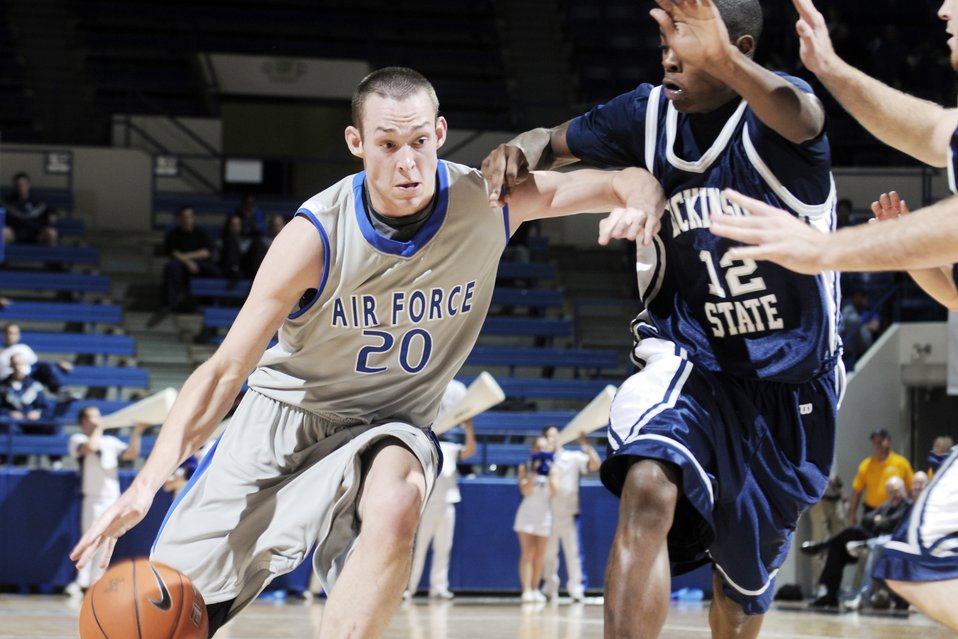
Falcons won 95-77

U.S. Air Force Academy, CO ? Junior forwardTom Fow drives toward the basket as Dickinson State's Joshua Henry defends during the Reggie Minton Air Force Classic at Clune Arena Nov 20. The Falcons won 95-77, but finished the tournament in 2nd place after a 70-46 loss to Northern Colorado in the championship game.